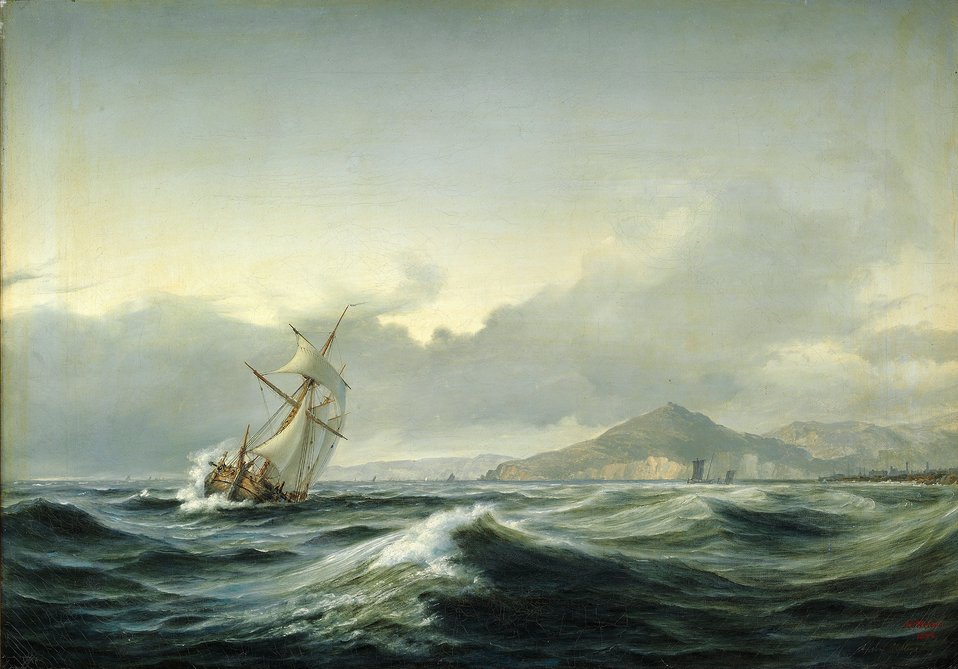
Anton Melbye - Marinemaleri med sejlskib i hård sø. I baggrunden en klippekyst